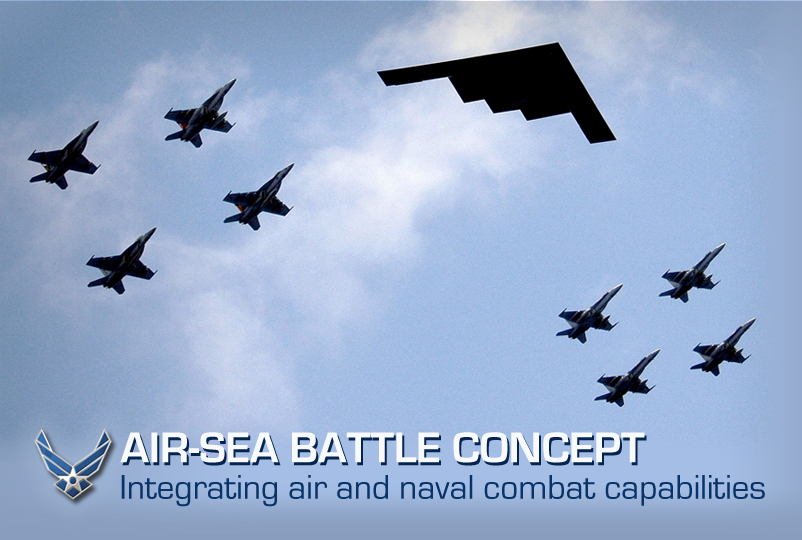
Air-Sea Battle Concept